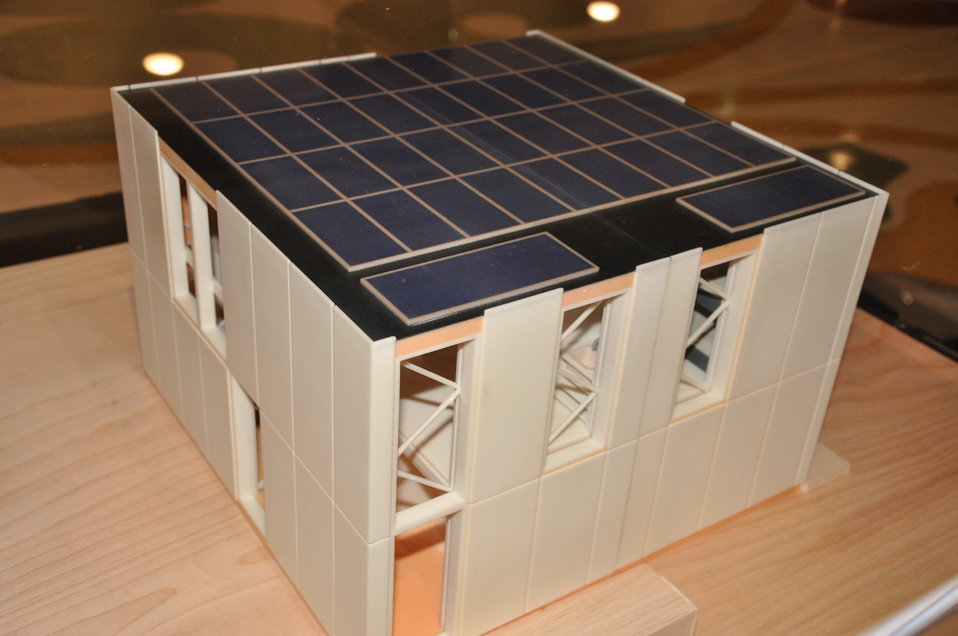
Team Belgium